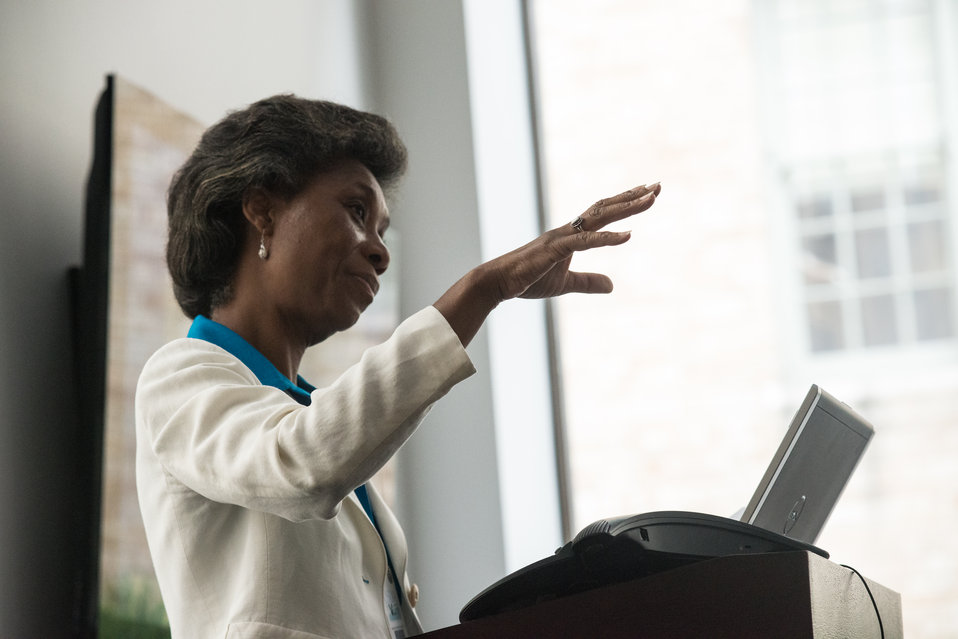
Sage Horizons Consulting Owner Cynthia Gibbs speaks at the U.S. Department of Agriculture’s (USDA) Rural Development (RD) 2nd Annual Cultural Transformation kickoff opening ceremony and forums, themed “Employees Influencing Change,” on Tuesday, Aug. 13, 2013, USDA in Washington, D.C.